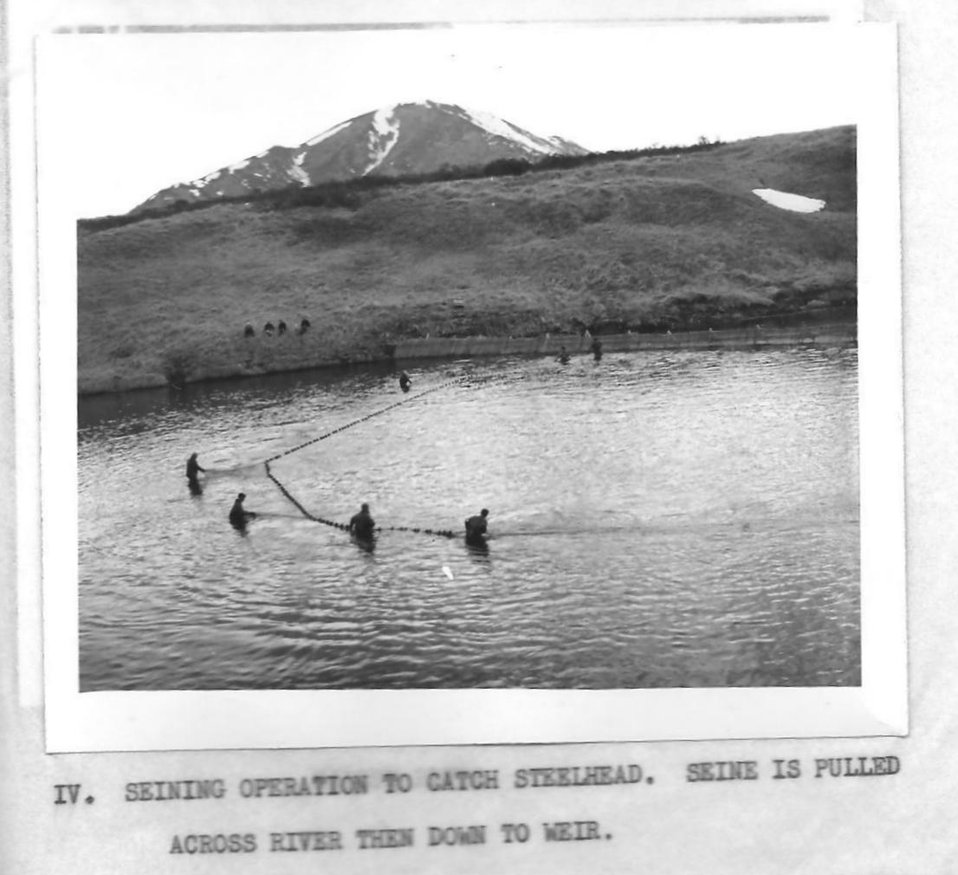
(1954) Seining for Steelhead

Credit: USFWS

Source and Contact: Kodiak National Wildlife Refuge